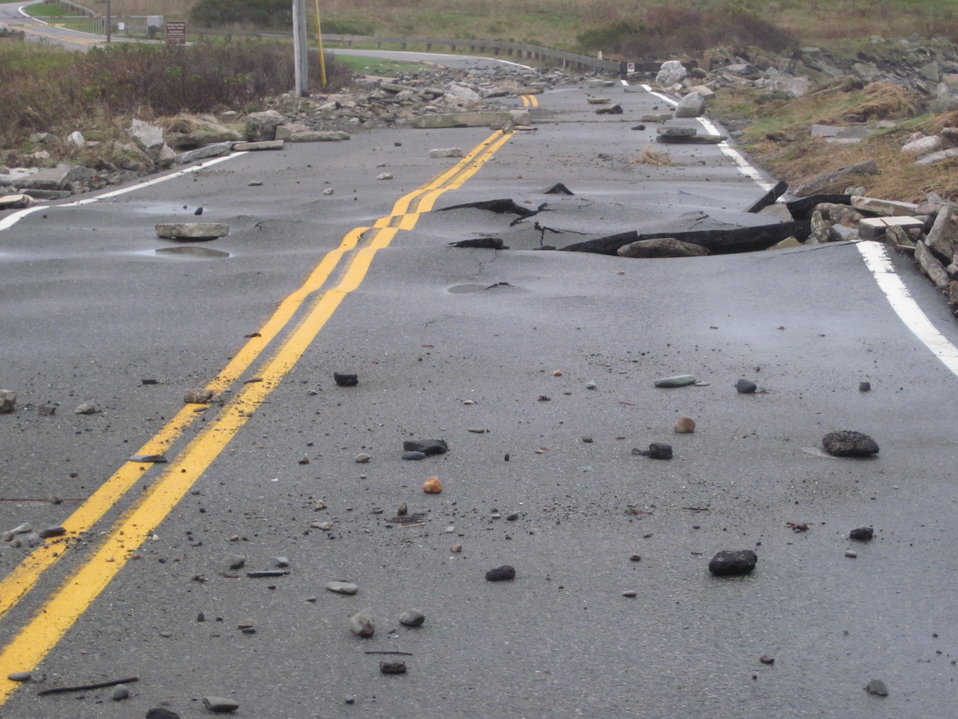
Hurricane damage at Sachuest Point National Wildlife Refuge (RI)

Damage to Sachuest Road.